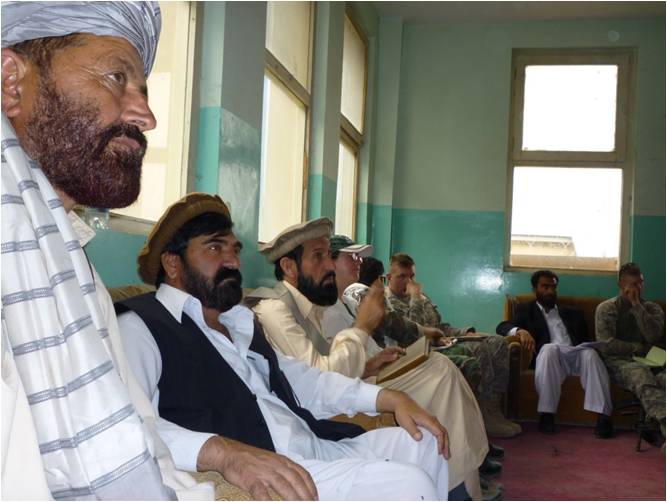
Deputy Governor Mangal Teams Up with IEC to Promote Election Security